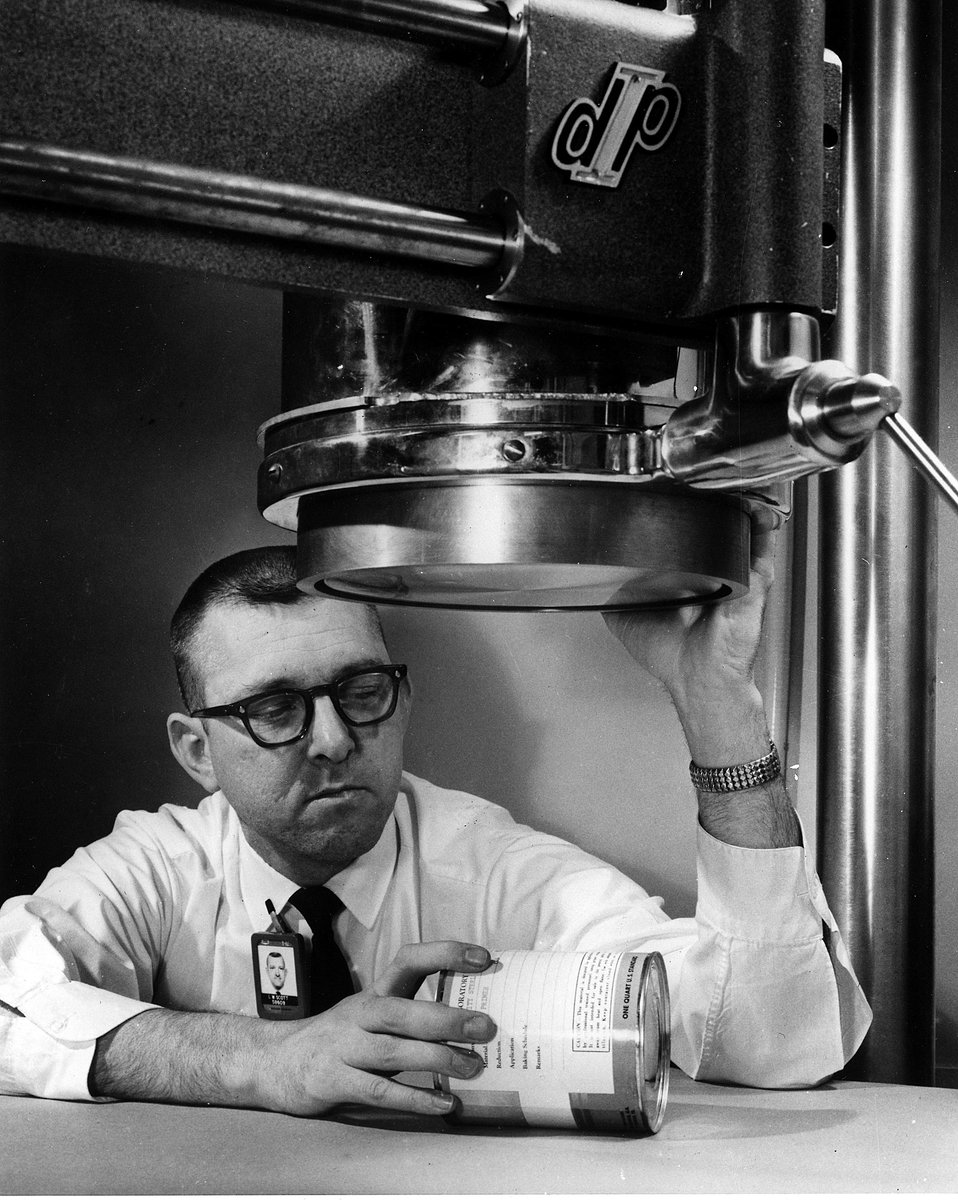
Health physicist Dr. Max Scott positions a sample can of paint under a gamma scintillation counter in the In Vivo Radioactivity Measurement Facility at the Oak Ridge Y-12 Plant, operated by Union Carbide Corporation for the U.S. Atomic Energy Commission. Circa 1967.